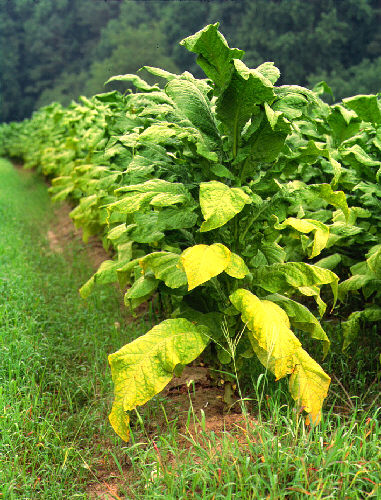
Tobacco plants.